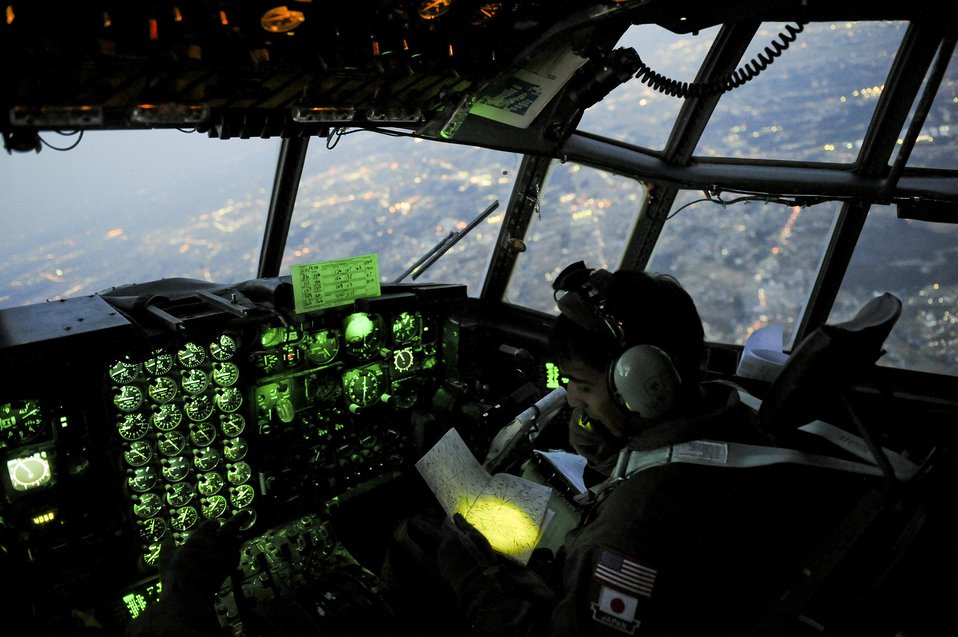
Mapping it out

Capt. Yuri Batten looks at a map of Japan while transporting medical supplies March 19, 2011. Captain Batten is a C-130 Hercules pilot from the 36th Airlift Squadron at Yokota Air Base, Japan.